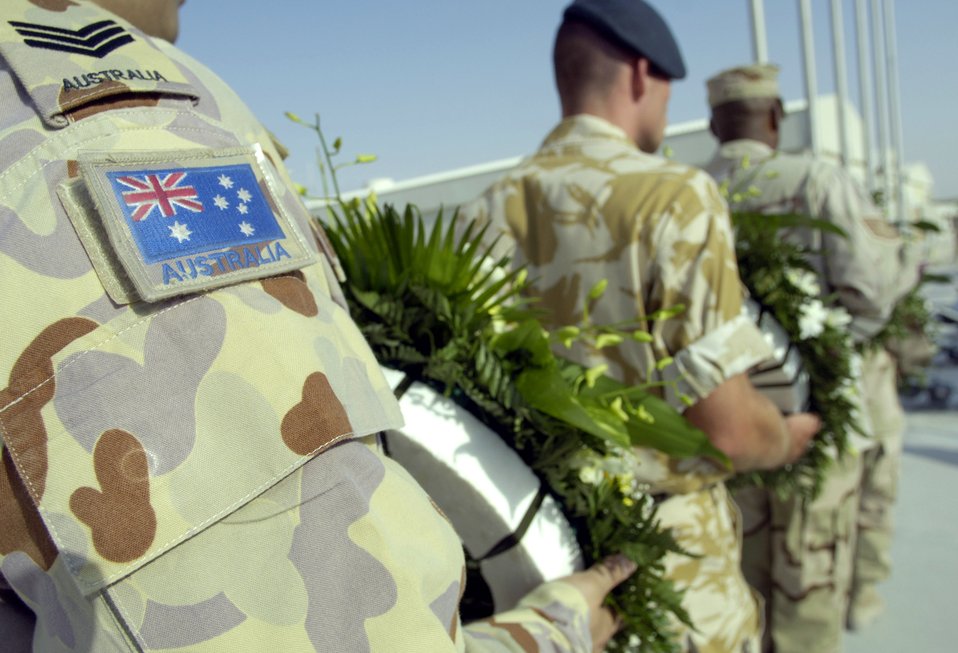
Southwest Asia memorial

Coalition partners from several countries gathered May 28 at this deployed location in Southwest Asia to participate in a Memorial Day ceremony. Originally known as Decoration Day, Memorial Day ceremonies are a time to pay tribute to servicemembers who have paid the ultimate sacrifice in securing freedom.